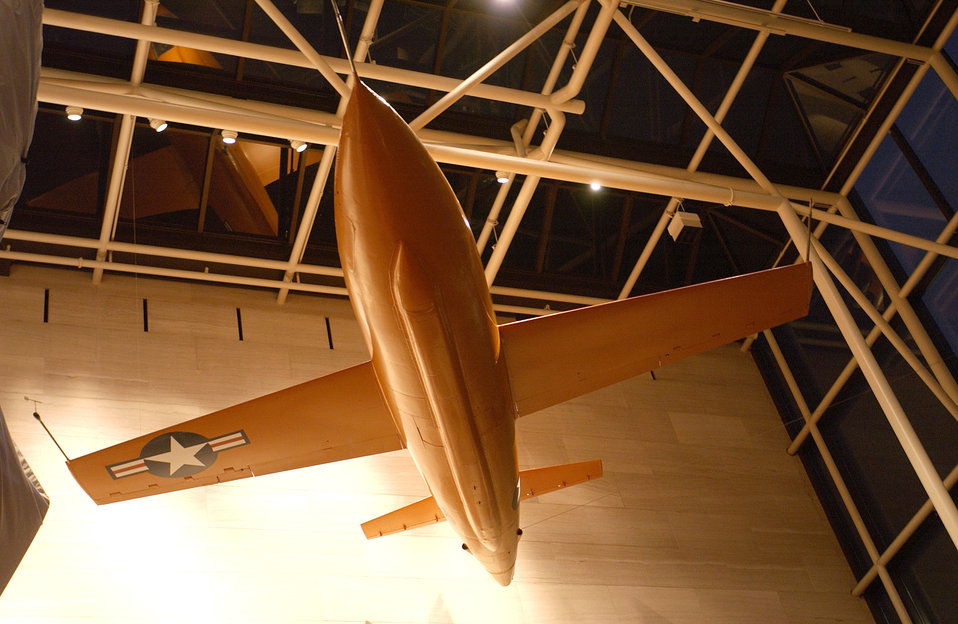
General Yeager speaks at Smithsonian

WASHINGTON -- The plane retired Brig. Gen. Charles E.